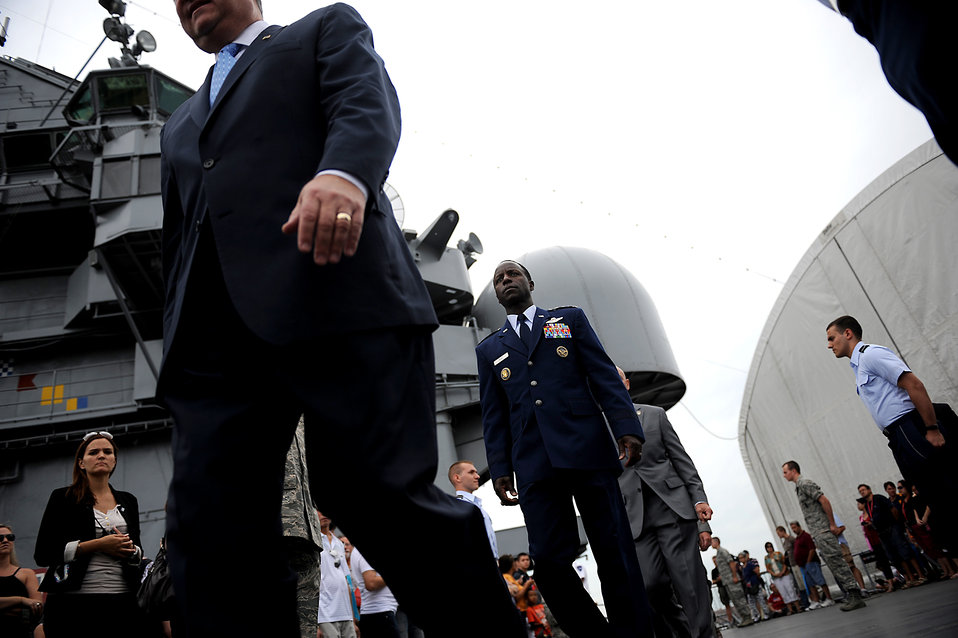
Opening ceremony

Gen. Edward A. Rice, alongside Secretary of the Air Force Michael Donley, walk out for the opening ceremony of Air Force Week 2012 in New York City on Aug. 19.